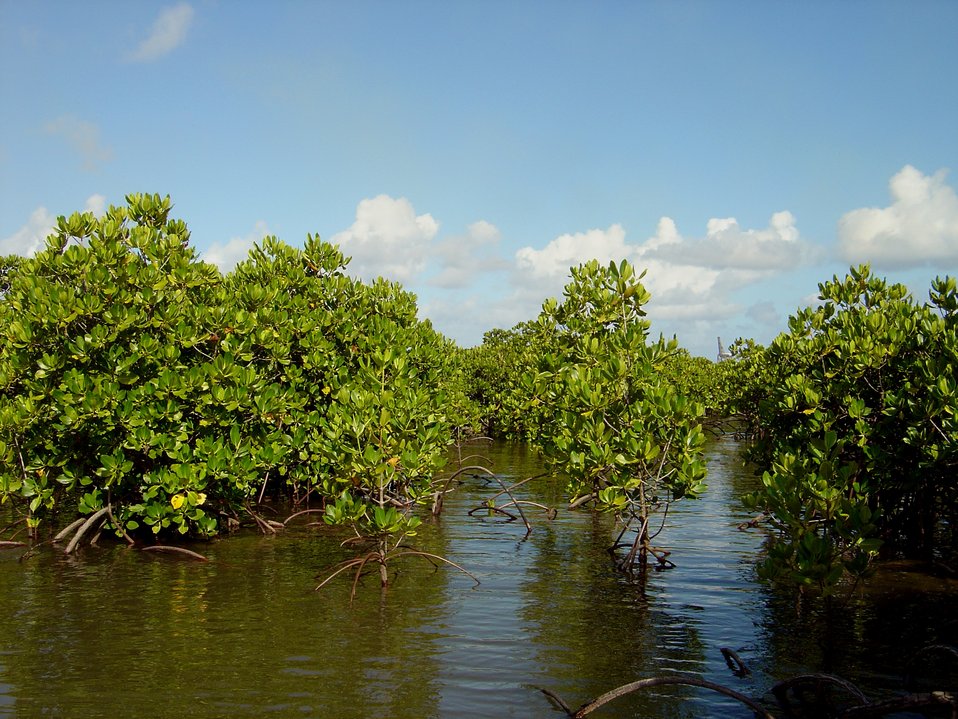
Mangroves growing in the coral rocks of the Guam coastline.